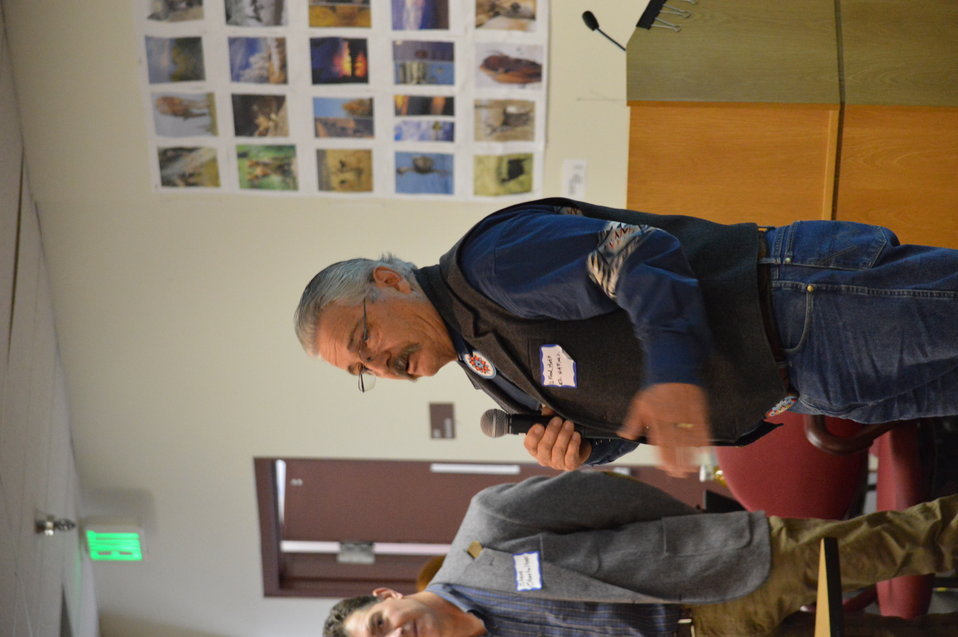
Opening Prayer at Eagle Summit III

Opening prayer by Fred Matt (NAFWS Director) at the Eagle Summit III in Denver, Colorado on March 20, 2014 at the Rocky Mountain Arsenal National Wildlife Refuge.